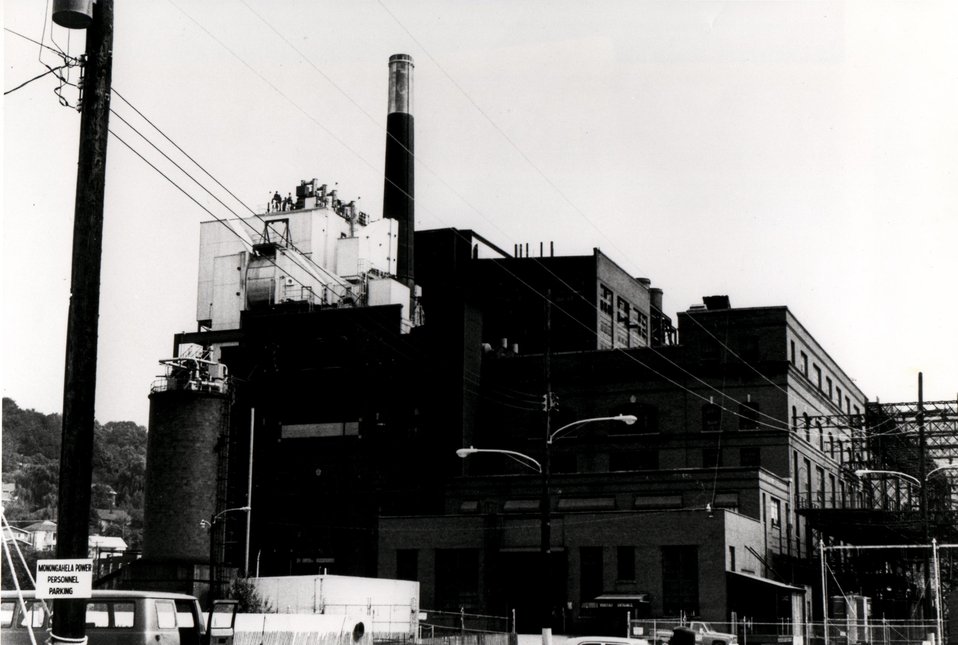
An advanced technology, the world's first multi-cell fluidized-bed combustion boiler, has generated electricity in this plant owned by the Monongahela Power Compact at Riversville, West Virginia.